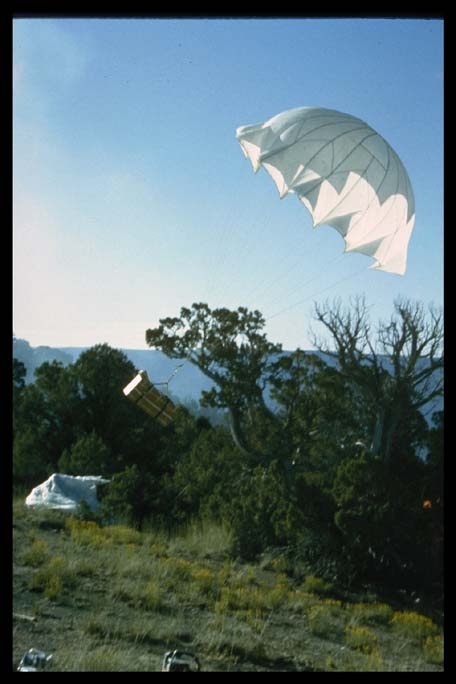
Smokejumper